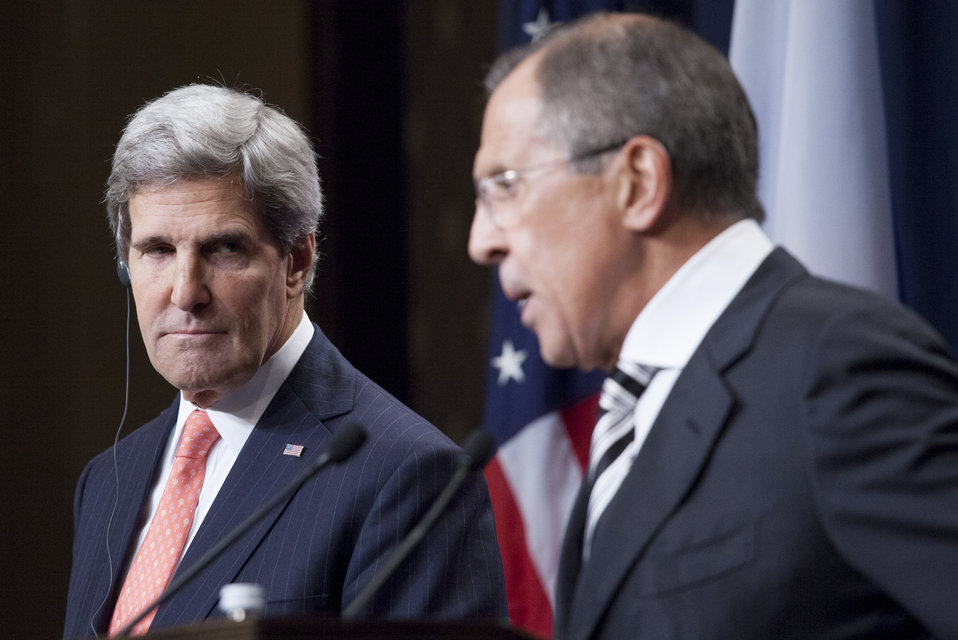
Secretary Kerry listens to Foreign Minister Lavrov

U.S. Secretary of State John Kerry listens to Russian Foreign Minister Sergey Lavrov during a news conference held after the two finalized a framework for the elimination for Syrian chemical weapons in Geneva, Switzerland, on September 14, 2013.